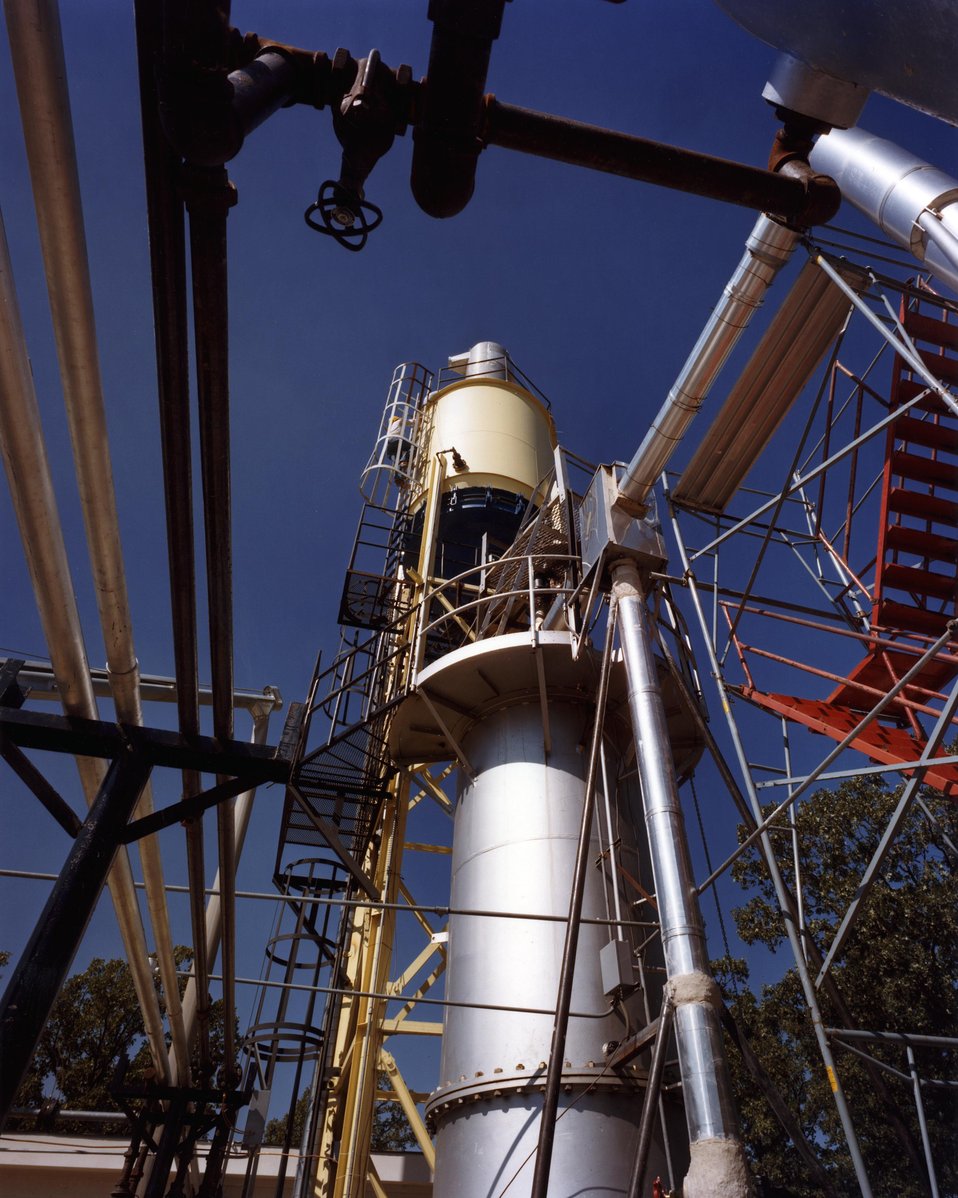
THE WOOD GASIFIER REACTOR, CYCLONE, AND FEED BIN.

THE WOOD GASIFIER AT THE UNIVERSITY OF MISSOURI IS PART OF THE PROGRAM TO DEVELOP BIOMASS AS A FUEL SOURCE. WOOD CAN BE PROCESSED TO PRODUCE MEDIUM BTU GAS THAT CAN BE USED DIRECTLY OR UPGRADED INTO SUCH FUELS AS SYNTHETIC NATURAL GAS, METHANOL, AMMONIA, AND PETROCHEMICAL SUBSTITUTES. THE MAIN OBJECTIVE OF THIS PROGRAM IS TO IMPROVE CONVERSION EFFICIENCY AND PRODUCTIVITY AND REDUCE PRODUCTION COSTS OF THE GASIFICATION PROCESS.